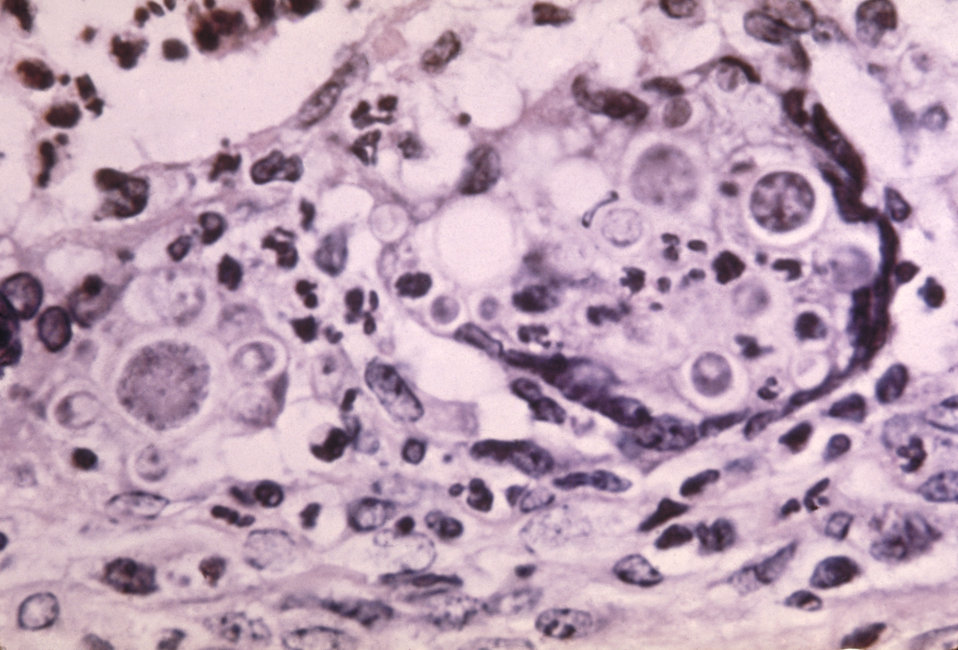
Histopathology of paracoccidioidomycosis.